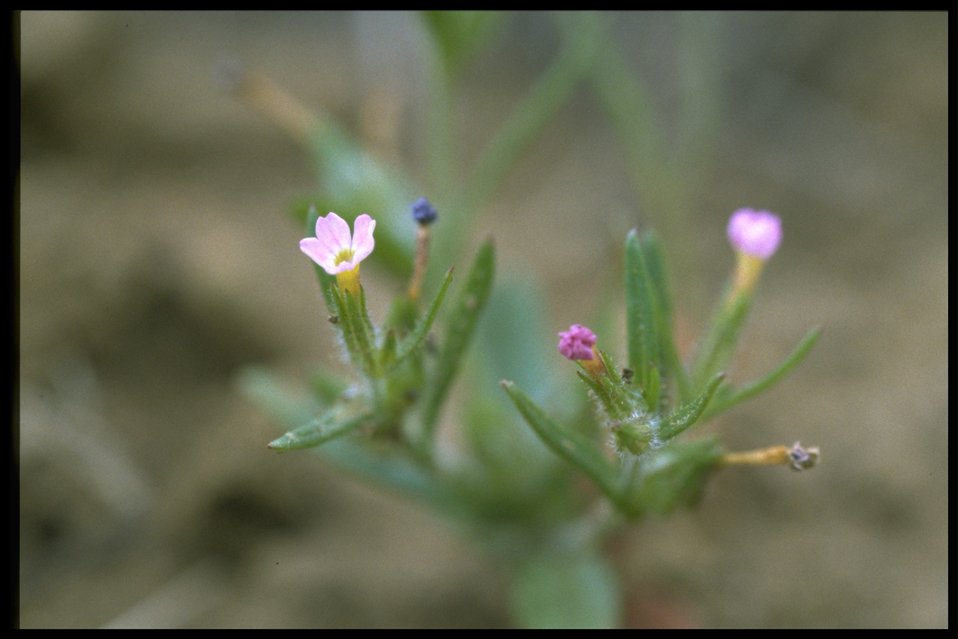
Closeup shot of slender phlox (Microsteris gracilis).